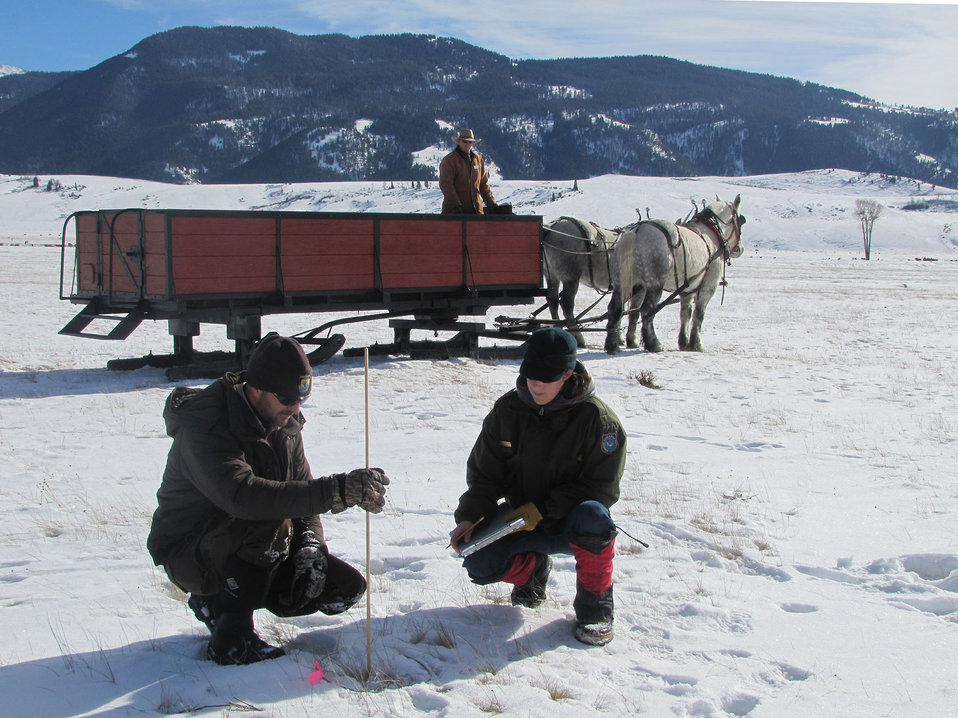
Unique Transportation

Biologists from the National Elk Refuge and the Wyoming Game & Fish Department check available forage by way of a horse-drawn sleigh. Nearby elk are acclimated to the sleighs, but individuals on foot spook and stress the wintering animals. Here, the sleigh driver uses the vehicle to hide the view of the scientists on the ground.